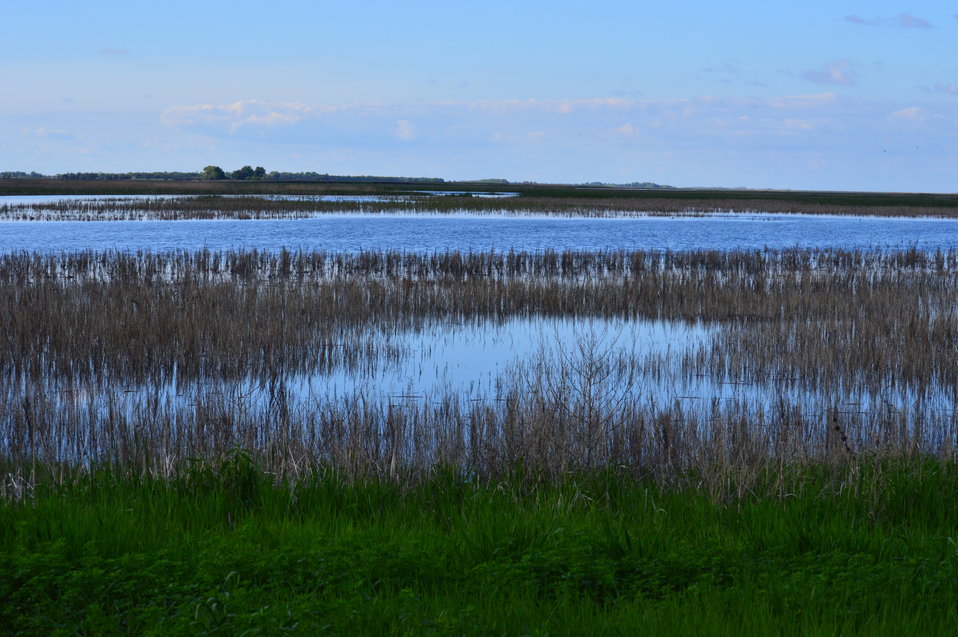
View of Sand Lake

Scenery and wildlife at Sand Lake National Wildlife Refuge in South Dakota